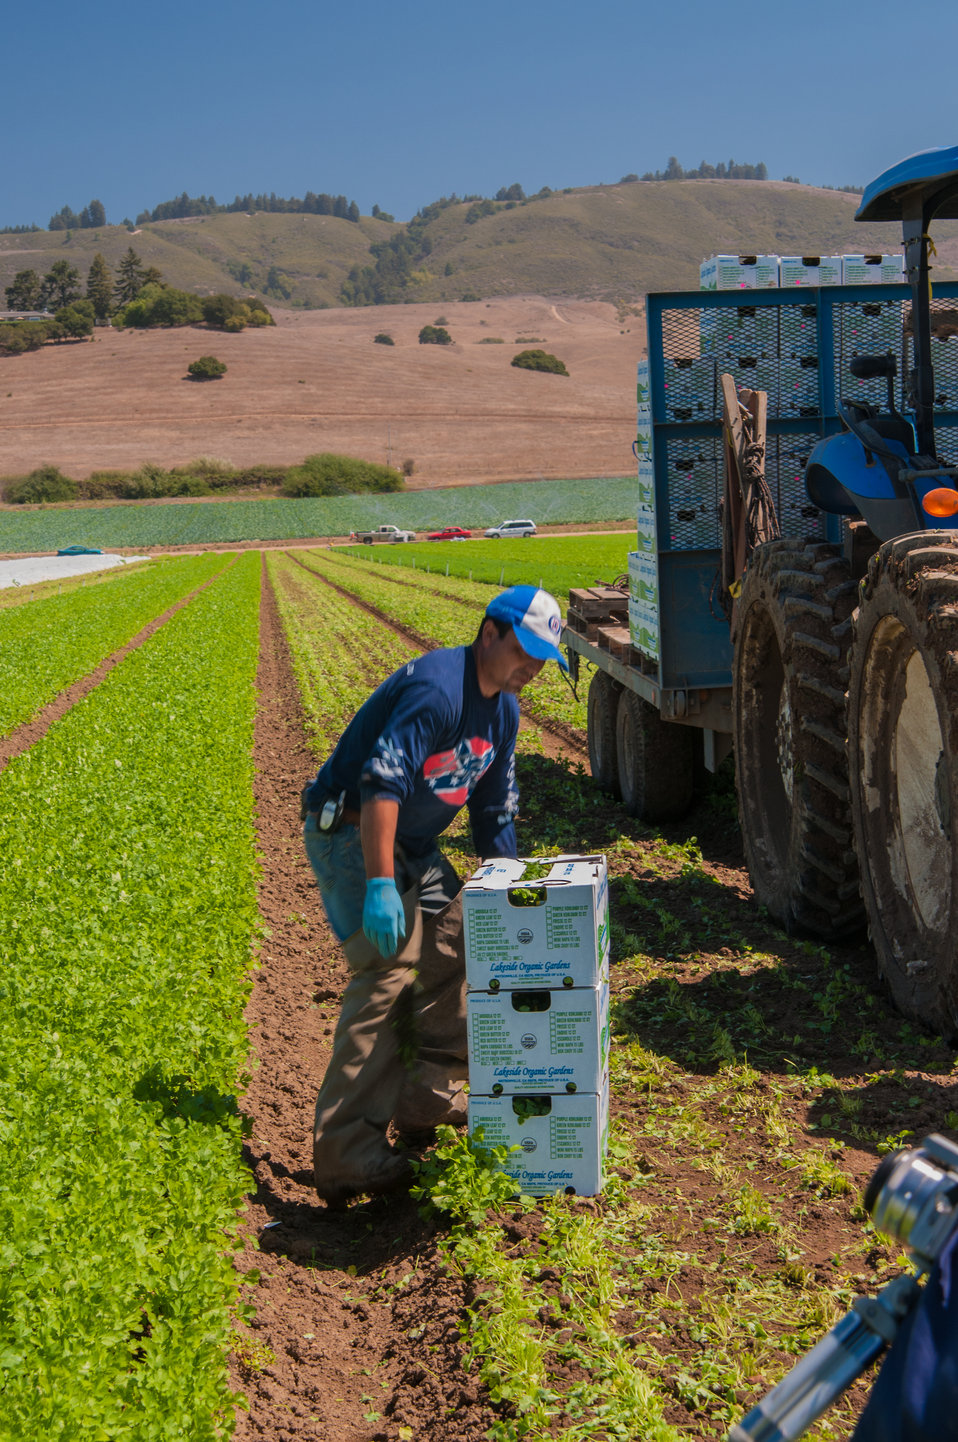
Migrant workers harvest CilaIntro at Lakeside Organic Gardens in Watsonville, CA on Tuesday, Aug. 27, 2013.